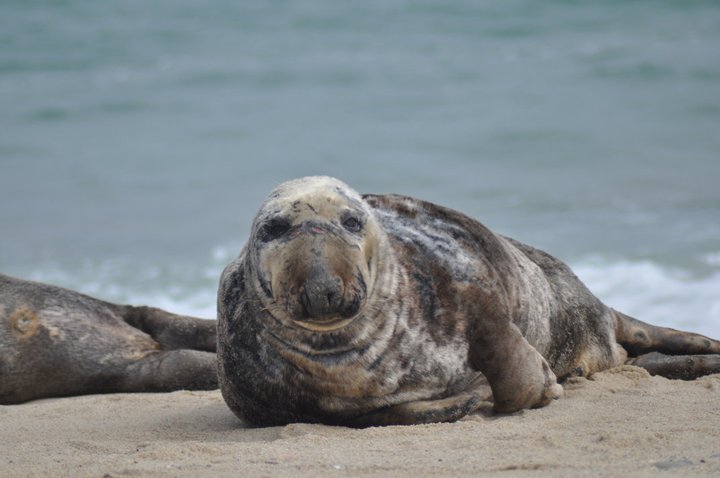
Male gray seal at Nantucket National Wildlife Refuge in Massachusetts.